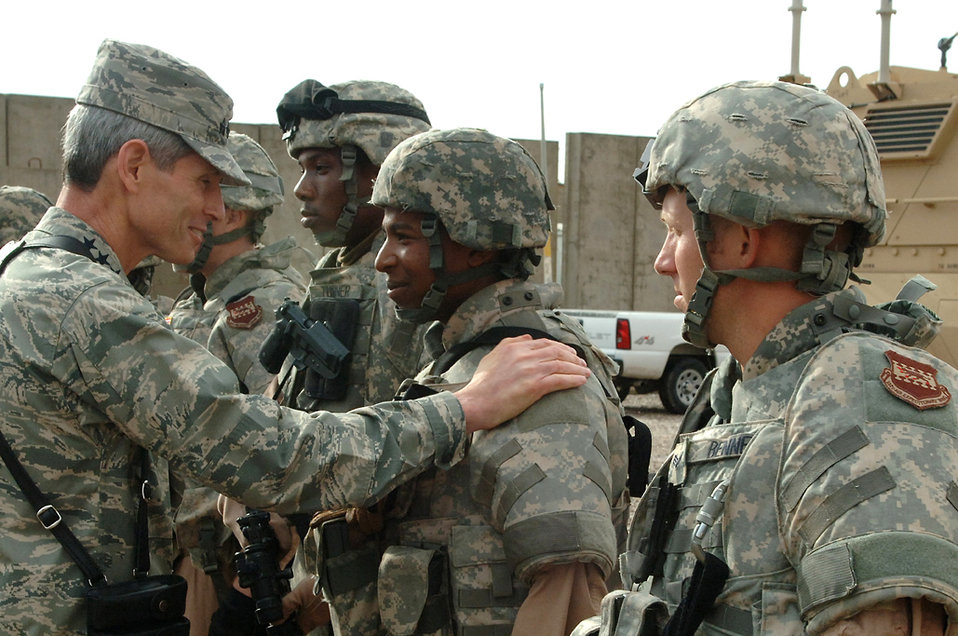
Chief of staff wraps up Middle East tour at Joint Base Balad

Air Force Chief of Staff Gen. Norton Schwartz visits Airmen assigned to the 532nd Expeditionary Security Forces Squadron quick response force during a tour of Joint Base Balad, Iraq, Oct. 25. The QRF are first responders to off-base security situations.